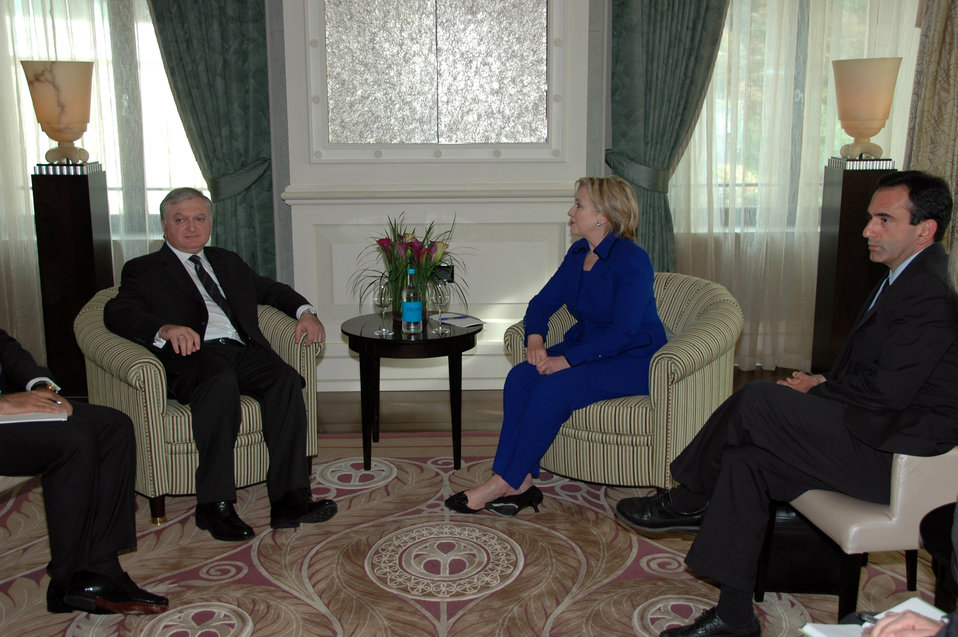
Secretary Clinton Meets With Armenian Foreign Minister

U.S. Secretary of State Hillary Rodham Clinton with Armenian Foreign Minister Edouard Nalbandian in Zurich, Switzerland October 9, 2009.